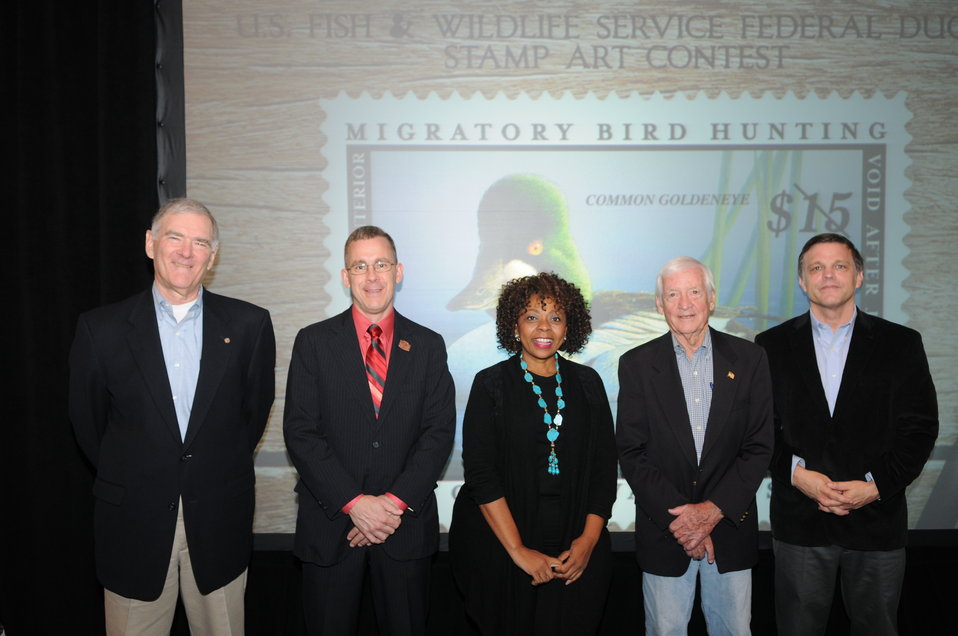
John Cornely, Chad Snee, Mamie Parker, John Ruthven and Douglas Brinkley (2013 Federal Duck Stamp Contest judges)